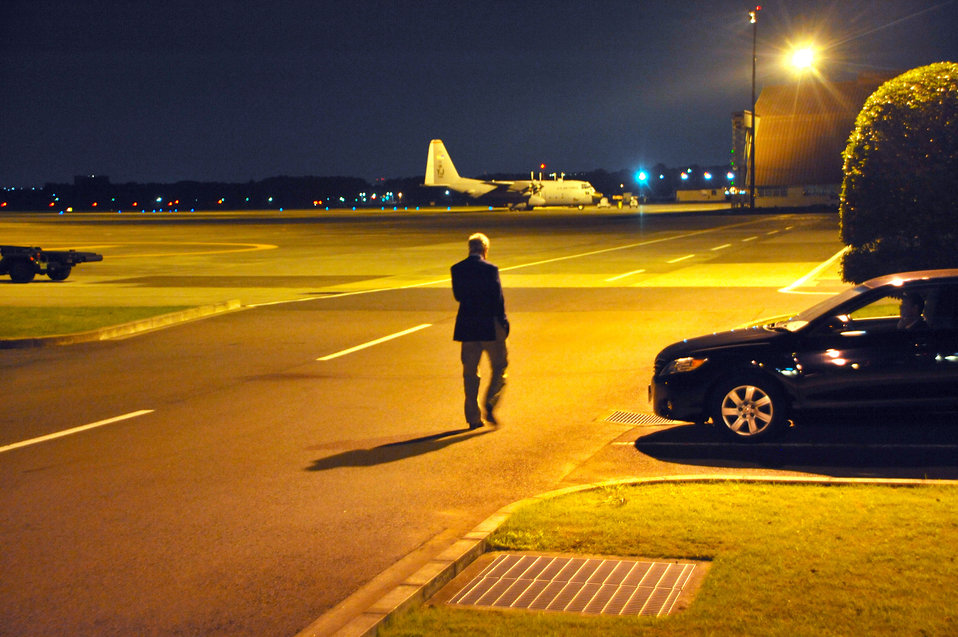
Secretary Kerry Makes a Phone Call

U.S. Secretary of State John Kerry makes a cell phone call while his jet refuels at Yokota Air Base in Japan on July 3, 2013, while en route to Washington, D.C., during the final legs of a 12-day, around-the-world trip.